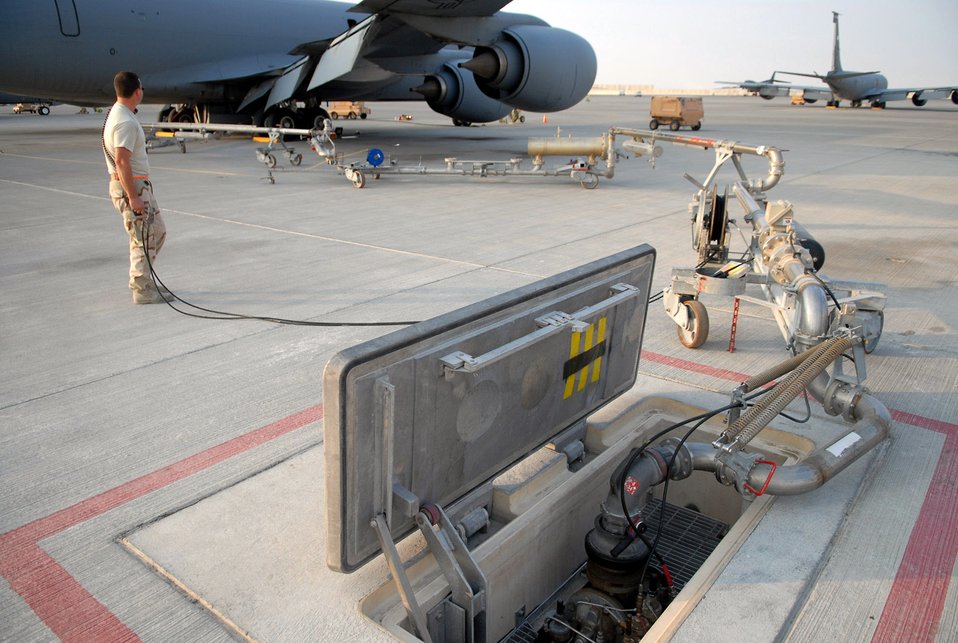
It's a gas

Staff Sgt. Brian McCaslin holds the